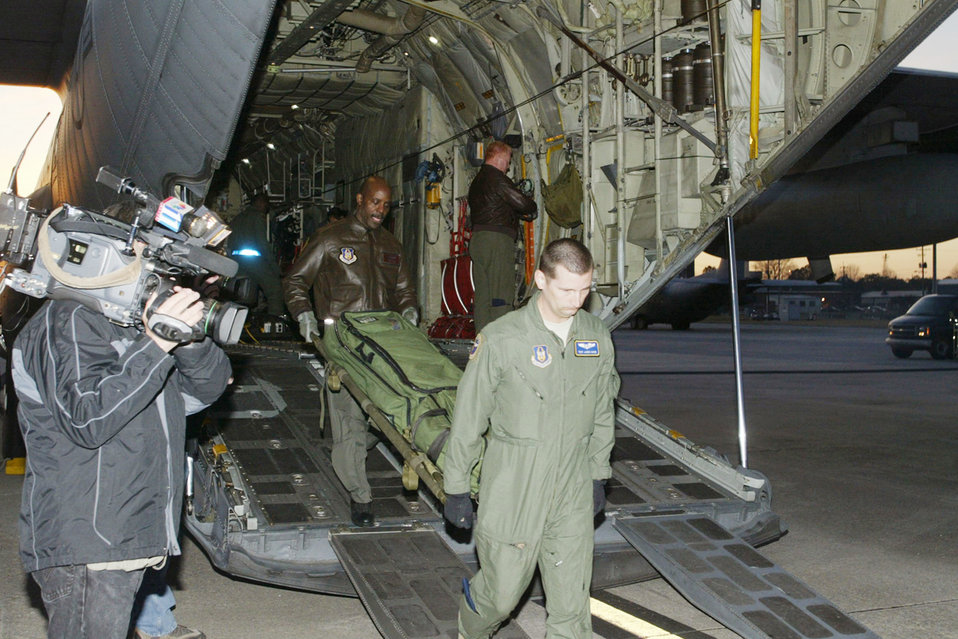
Dobbins medical team returns from Haiti relief mission

Tech. Sgt. Jason Wade and Master Sgt. Jon Wallace offload medical equipment they used to provide critical assistance to Haitians Jan. 31, 2010, at Dobbins Air Reserve Base, Ga. The crew returned from a two-week deployment in support of Operation Unified Response. Sergeants Wade and Wallace are 94th Aeromedical Evacuation Squadron medical technicians.